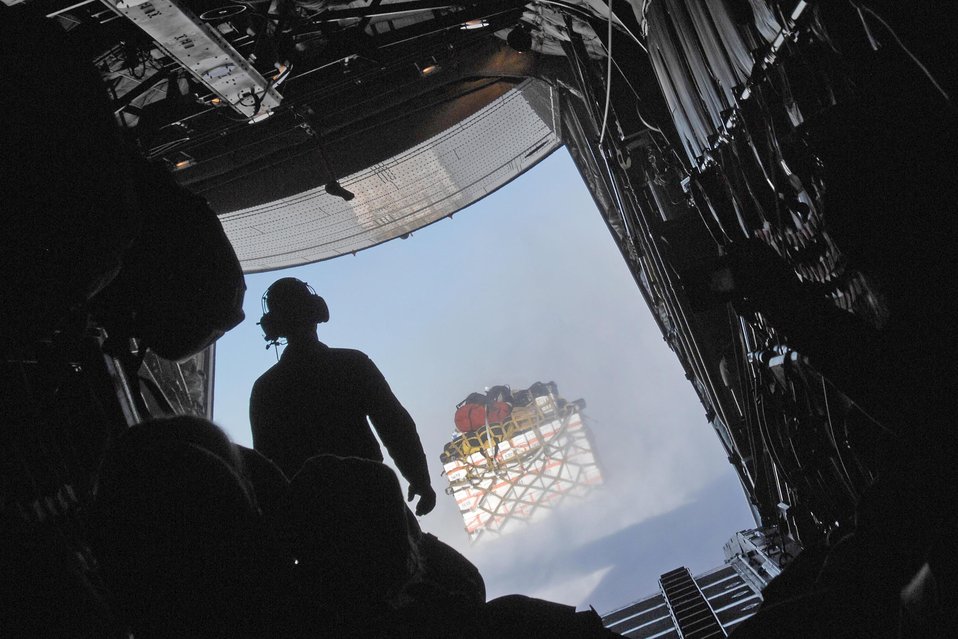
Polar mission

A crew chief watches as supplies slide off of the LC-130 Hercules cargo plane and onto the ice sheet July 28, 2010, at a remote science research site in Greenland. The 109th Airlift Wing is the only military unit in the world to fly such aircraft and has flown missions to Greenland since 1975. The unit now provides airlift support to the National Science Foundation's polar research program here.